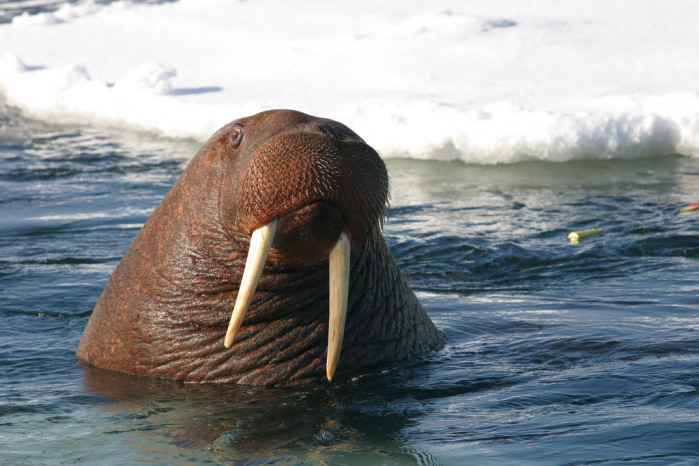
#38 - CITES 101

Countdown to CoP16: Did you know that a country can ask for international assistance to control the trade of a native species under CITES? CITES Appendix III allows Parties to list species native to their borders and ensure they are protected internationally. One example is the walrus, listed in Appendix III by Canada.

Walrus. Taken by Joel Garlich-Miller/USFWS, Bering Sea, Alaska, 2011.